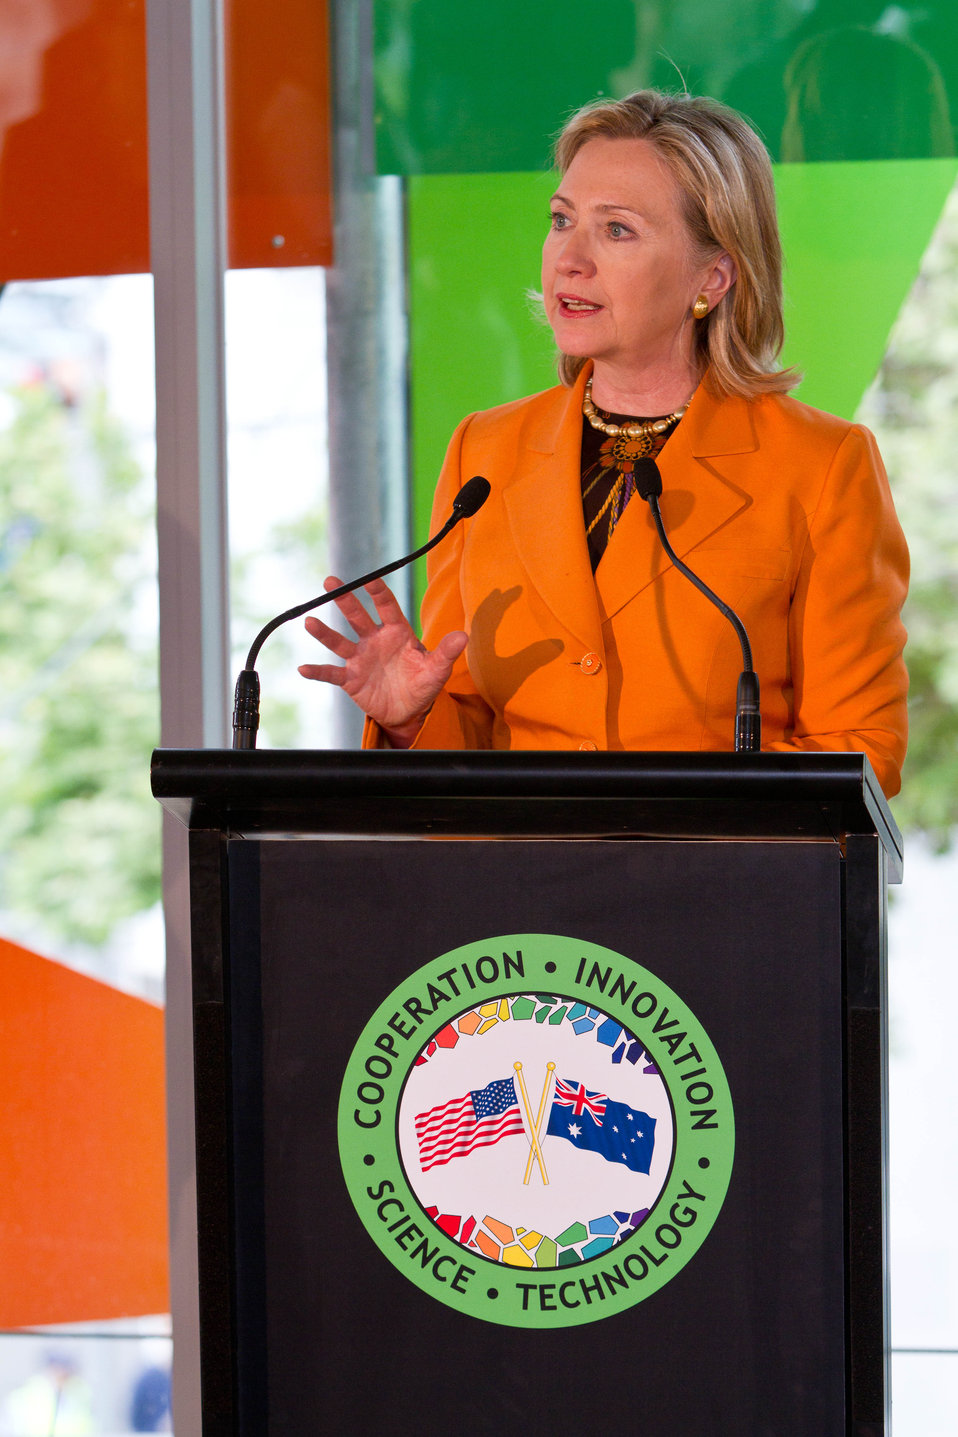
Secretary Clinton Delivers Remarks

U.S. Secretary of State Hillary Rodham Clinton delivers remarks at the Pixel Building Clean Tech Event in Melbourne, Australia, on November 7, 2010.